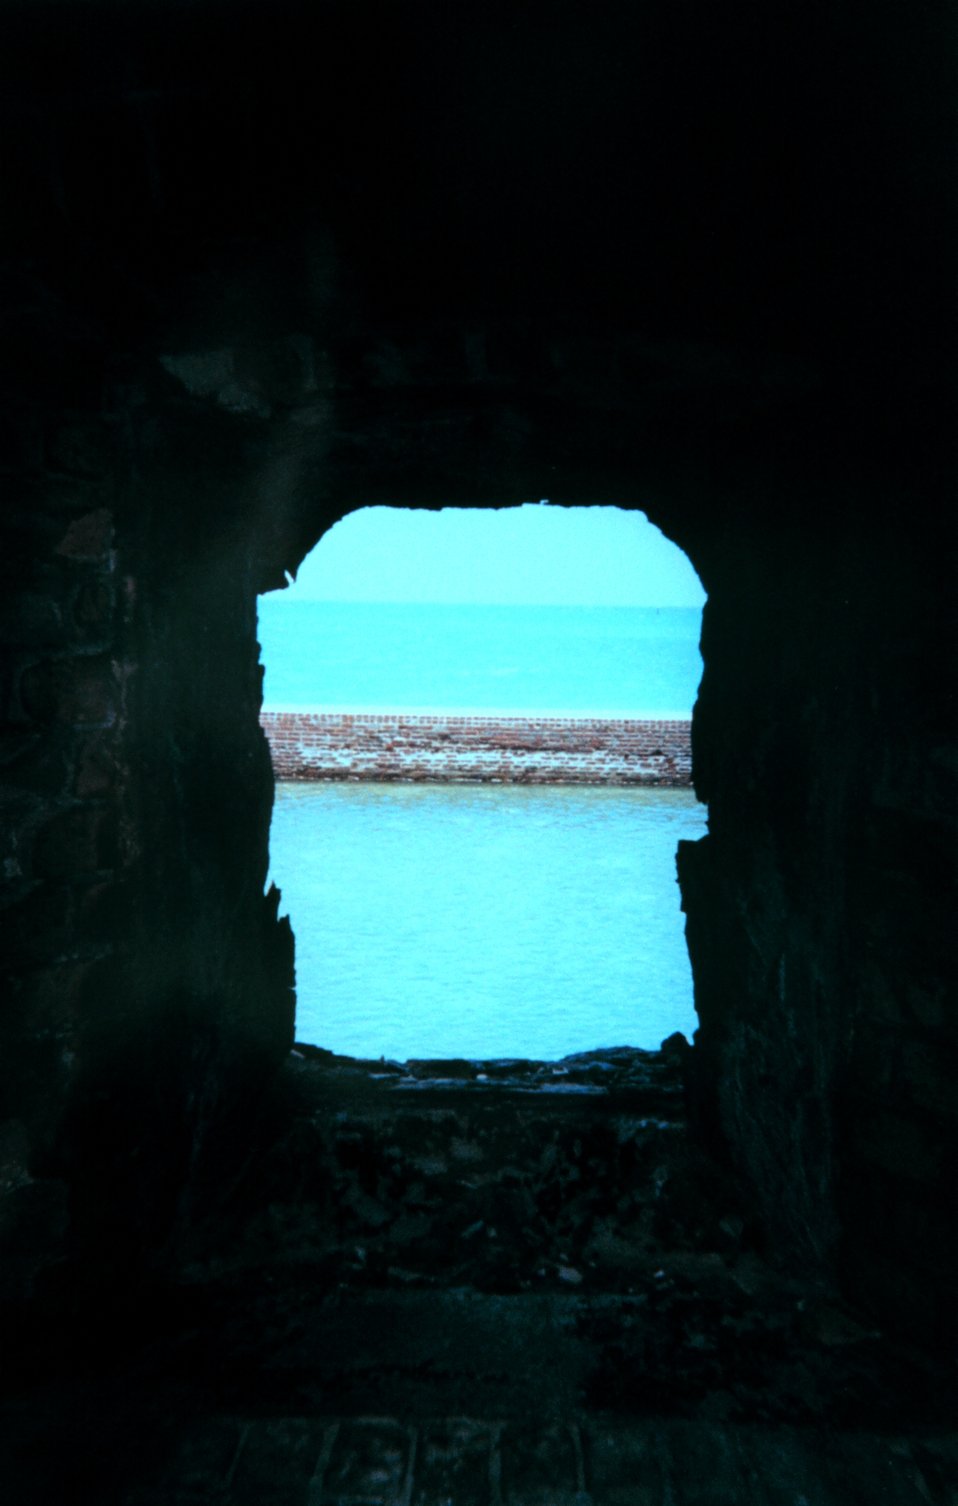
Looking through a cannon port towards the azure waters of the southern Gulf of Mexico. These openings also served as air conditioning and let the sea breeze through.